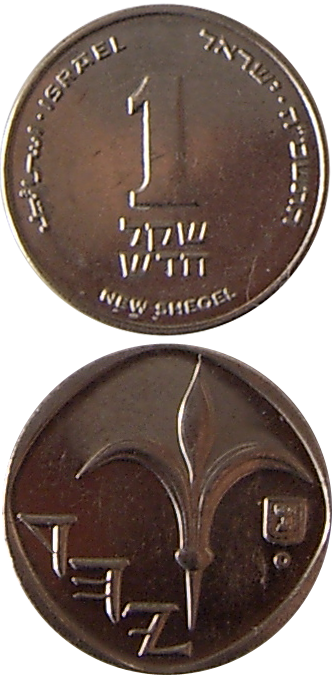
1 NIS coin - התשס'א
Reverse is based on ancient coin, and has Aramaic name of Judea (יהד) in ancient script.